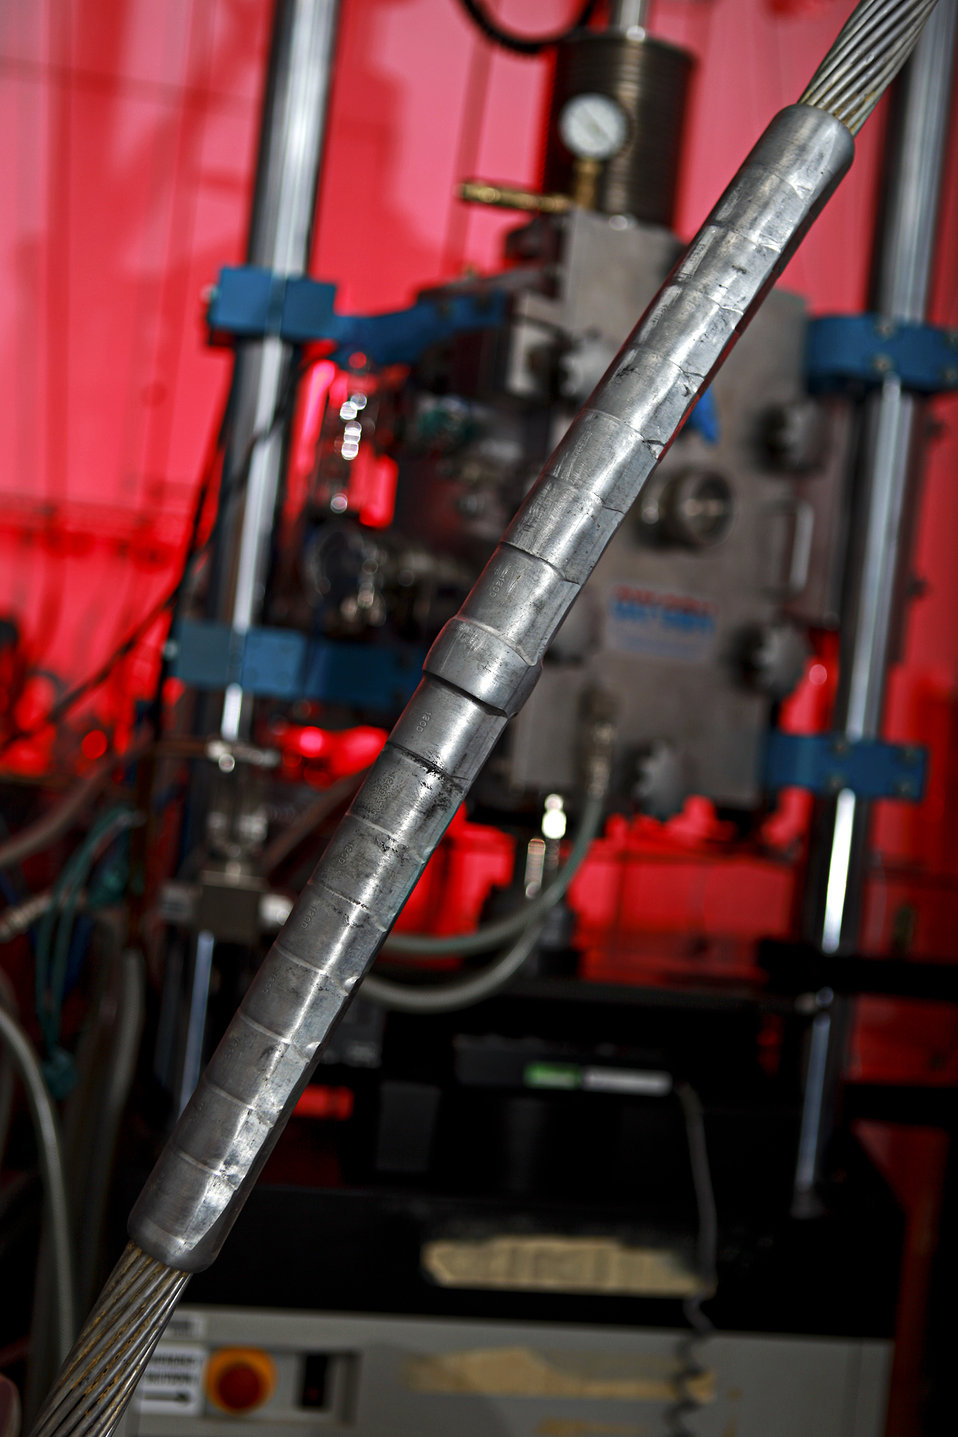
Methodology for estimating the life of power line conductor - connector systems operating at high temperatures (MELCOT) at Oak Ridge National Laboratory.

This technology predicts the service life of conductor-connect systems. The splices connecting the conductor lines are literally the weak links in the transmission systems. With this new method of investigating performance and integrity of the power line system, researchers can develop more durable and reliable systems for the electric power grid. Power grid operators can maintain power flow and prevent potential grid failures, and effectively reroute power distribution during emergency or natural disasters.